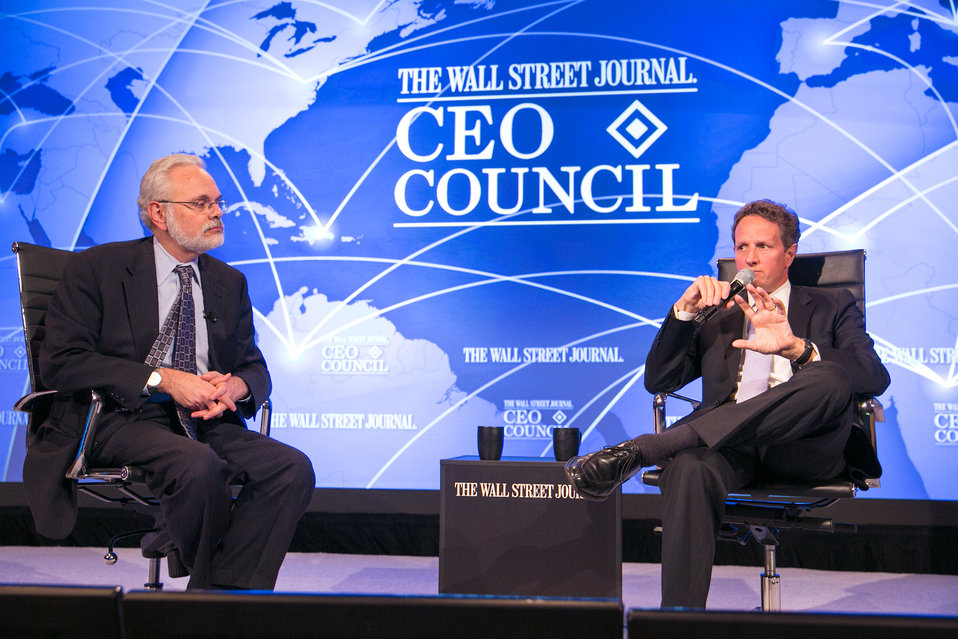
Secretary Geithner interviewed at the Wall Street Journal CEO Council

Secretary Geithner participated in a discussion moderated by the Wall Street Journal's Economics Editor David Wessel at the Wall Street Journal CEO Council in Washington, DC.